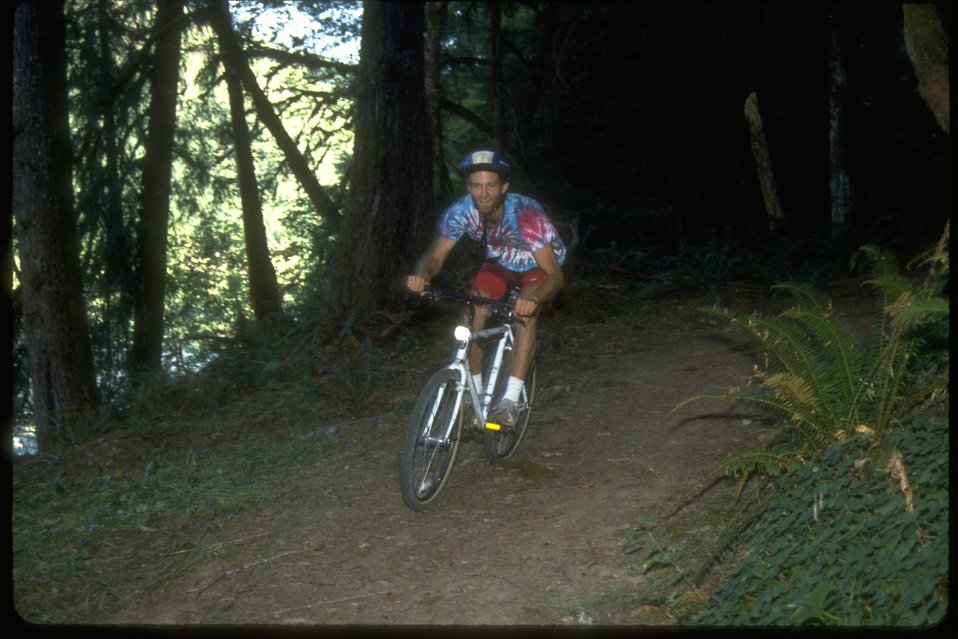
Mountain biking on the North Umpqua Trail.